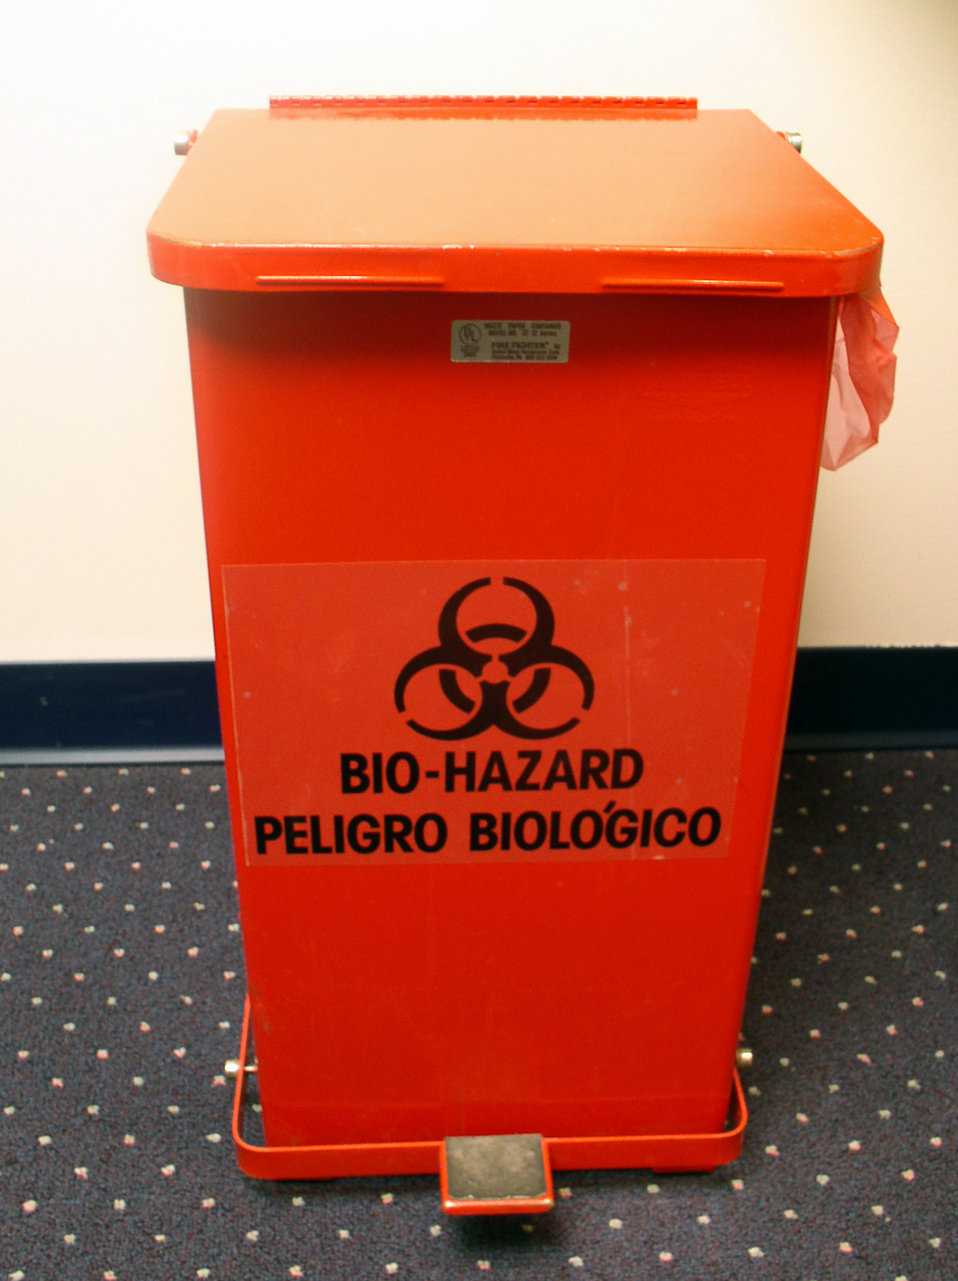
This image shows an example of a bio-hazard waste container found in many labs throughout the CDC.